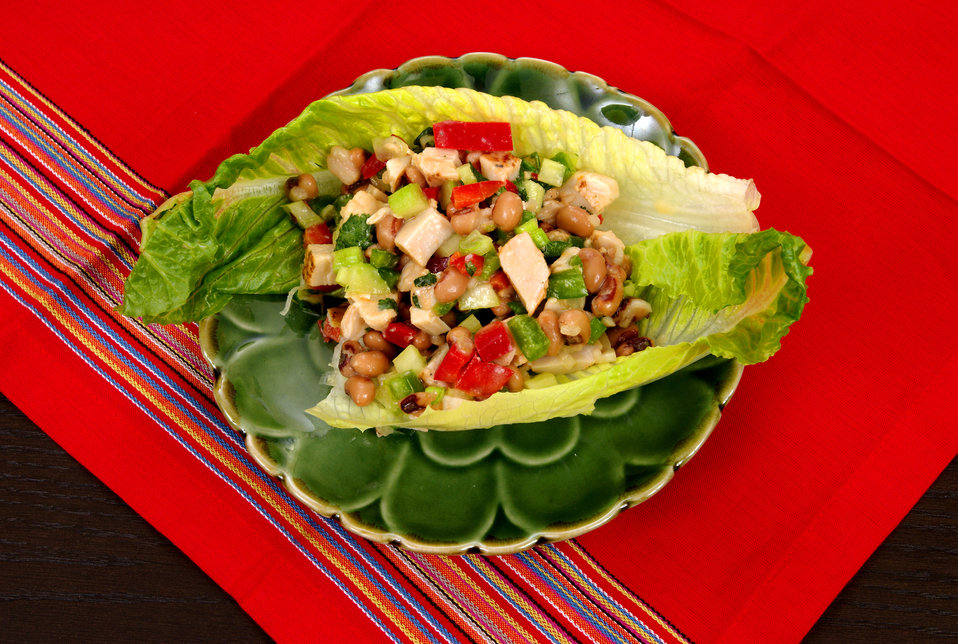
This image depicts a single serving of a delicious-looking black-eyed bean salad set atop a circle of romaine lettuce leaves. The salad included green and red peppers, scallions, chopped garlic, cubed white-meat chicken, and olive oil.